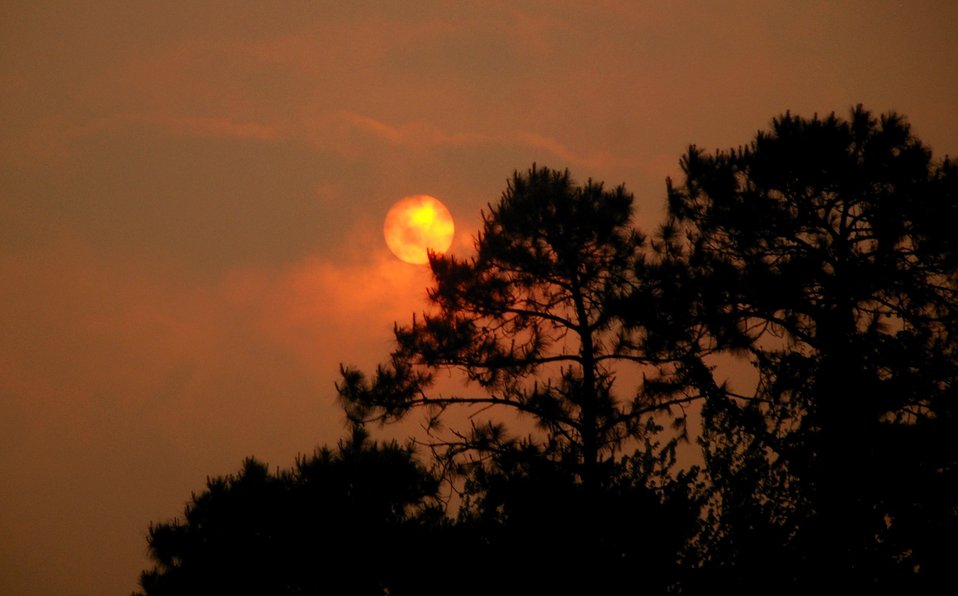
smoky skies

Alligator River National Wildlife Refuge, NC